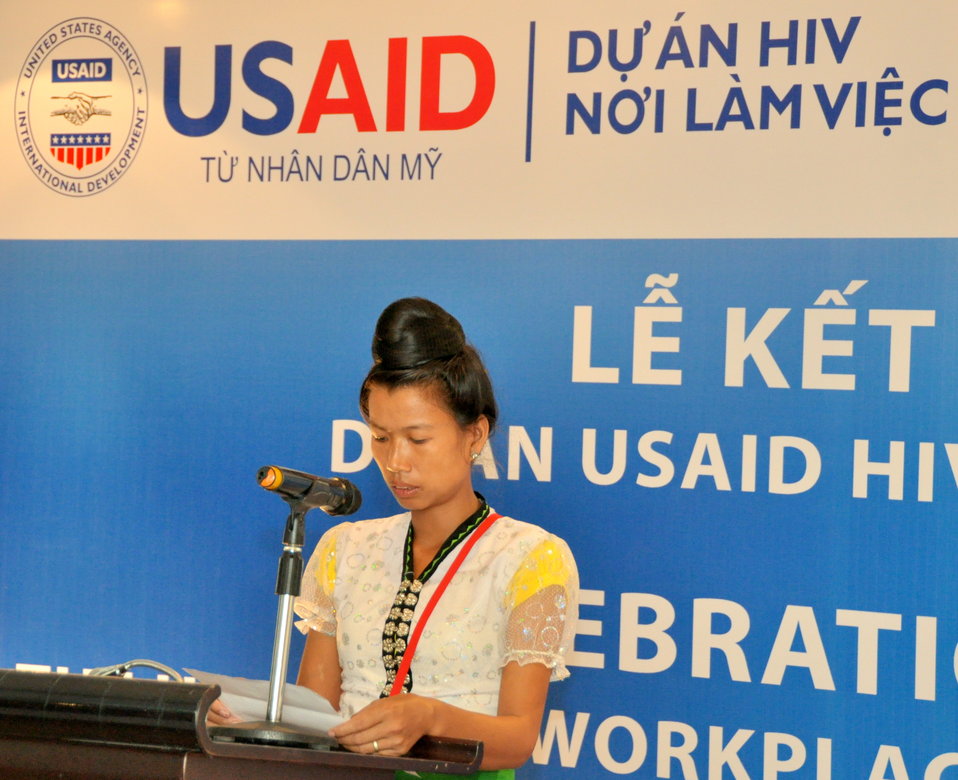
A beneficiary of USAID HIV Workplace Project, who belongs to Thai ethnic minority group and lives in Dien Bien province, tells her story at the event.

Hanoi, June 20, 2013.